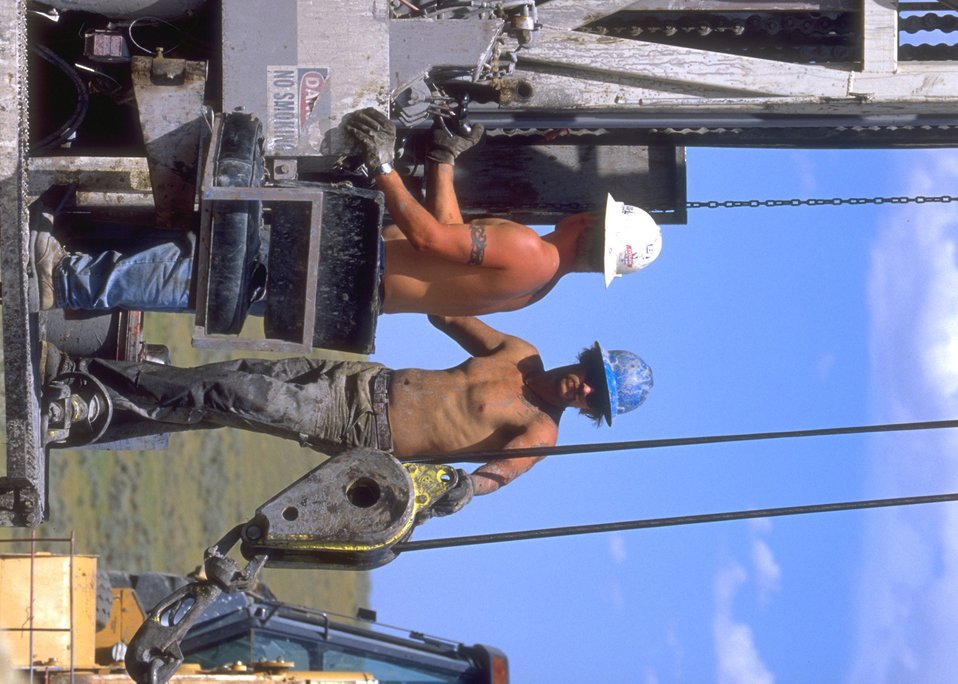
Drill site for coal bed methane, Buffalo Field Office.